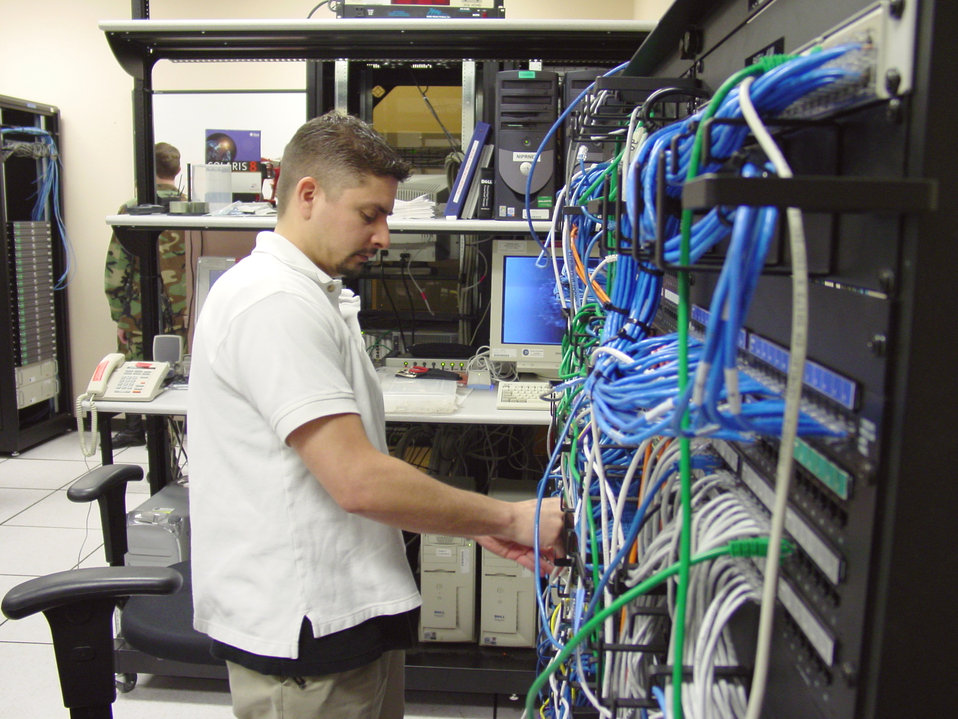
Computer, network, hacker

LACKLAND AIR FORCE BASE, Texas -- Christopher Lupo verifies the configuration of the tactics development facility during Black Demon, a two-week exercise focused on Air Force network defense. Mr. Lupo is an Air Force Information Warfare Center contractor here.